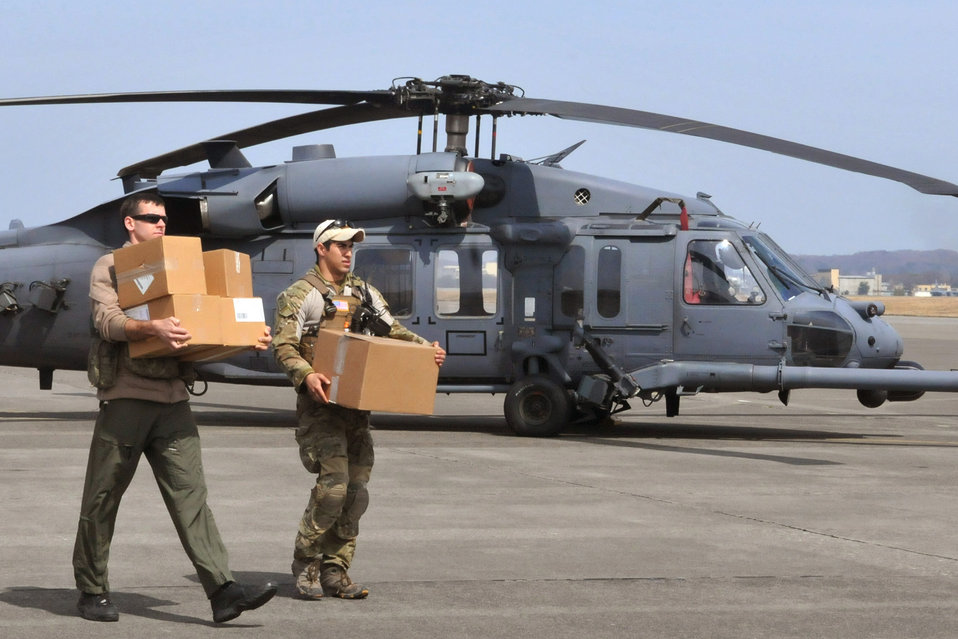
Care packages

Two Airmen from the 33rd Rescue Squadron at Kadena Air Base, Japan, carry medical supplies to an HH-60G Pave Hawk prior to takeoff March 20, 2011, from Yokota AB, Japan.